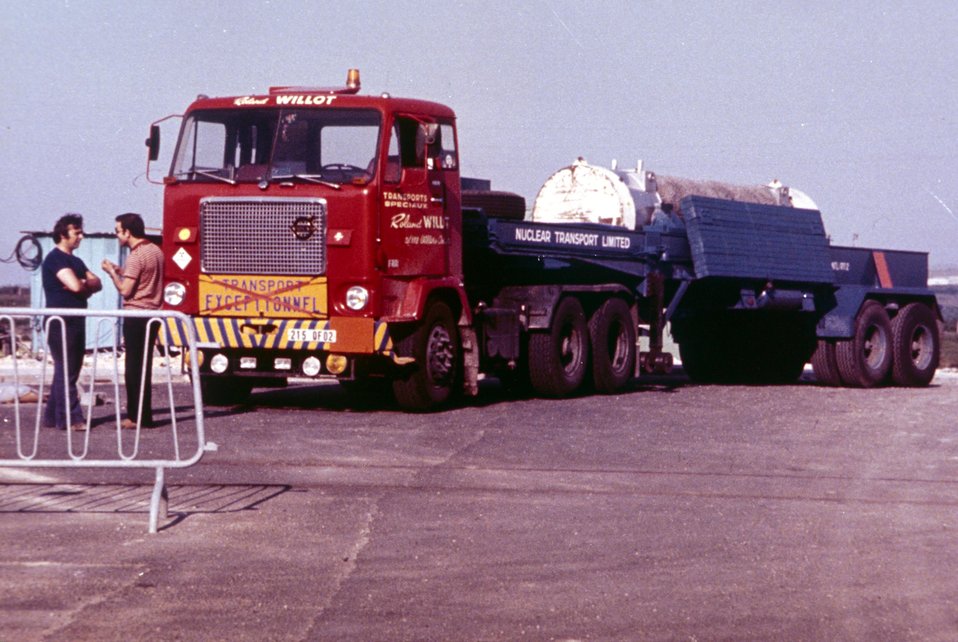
Le transport des combustibles irradiÐs.